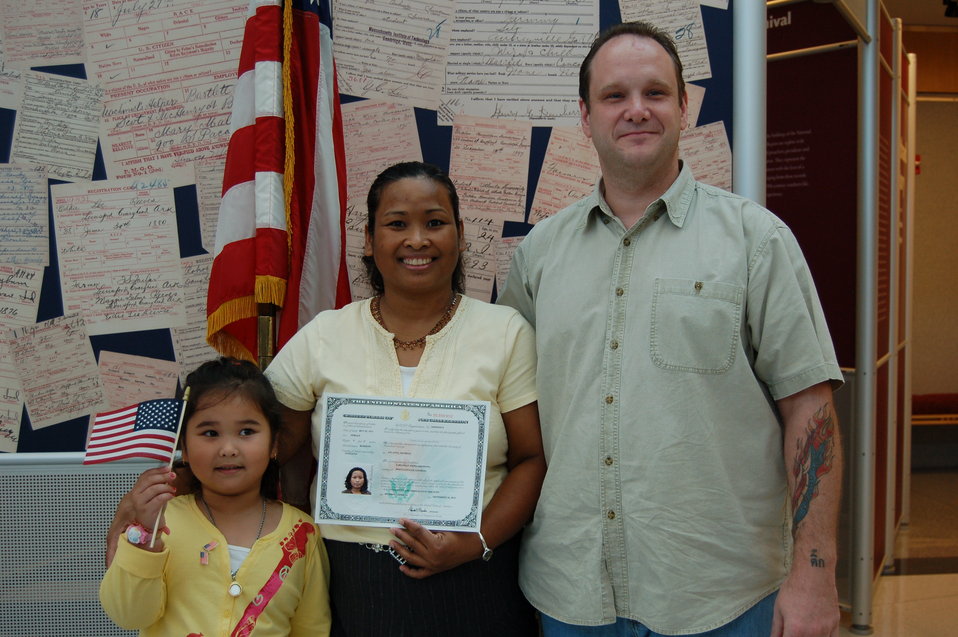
New Citizens